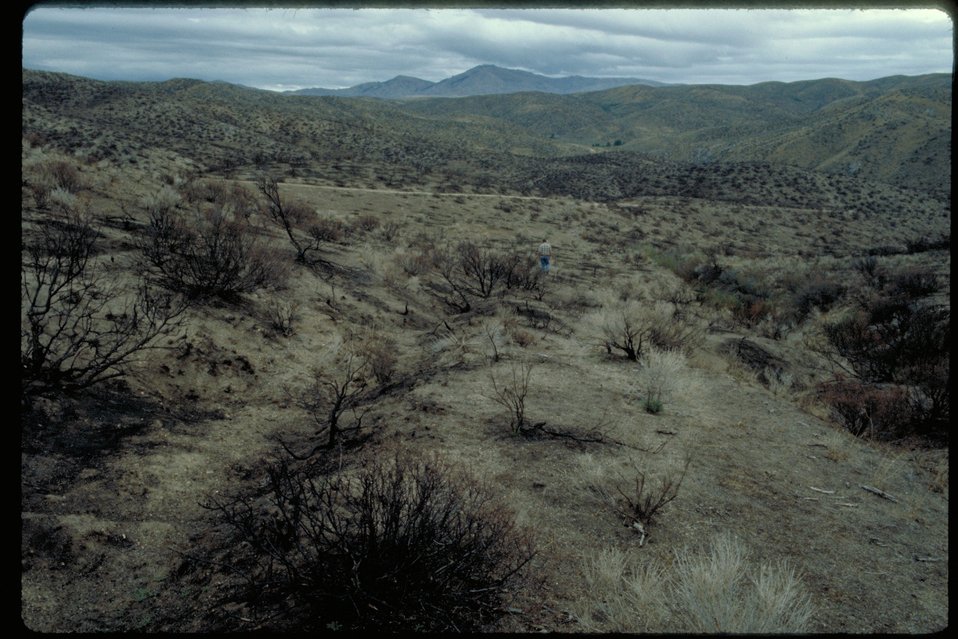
Oregon Trail Goodales Cutoff west of Ditto Creek Lower Snake River District